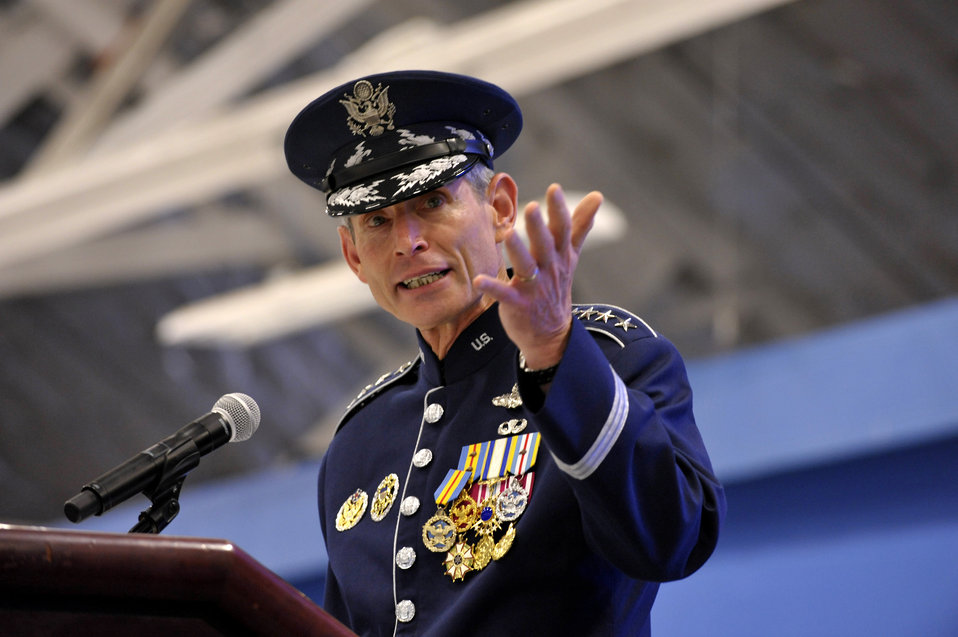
Farewell

Gen. Norton Schwartz addresses the audience during the Air Force chief of staff transition ceremony at Joint Base Andrews, Md., Aug. 10, 2012. Schwartz served in the Air Force for 39 years, the last four years as the Air Force's senior uniformed leader.